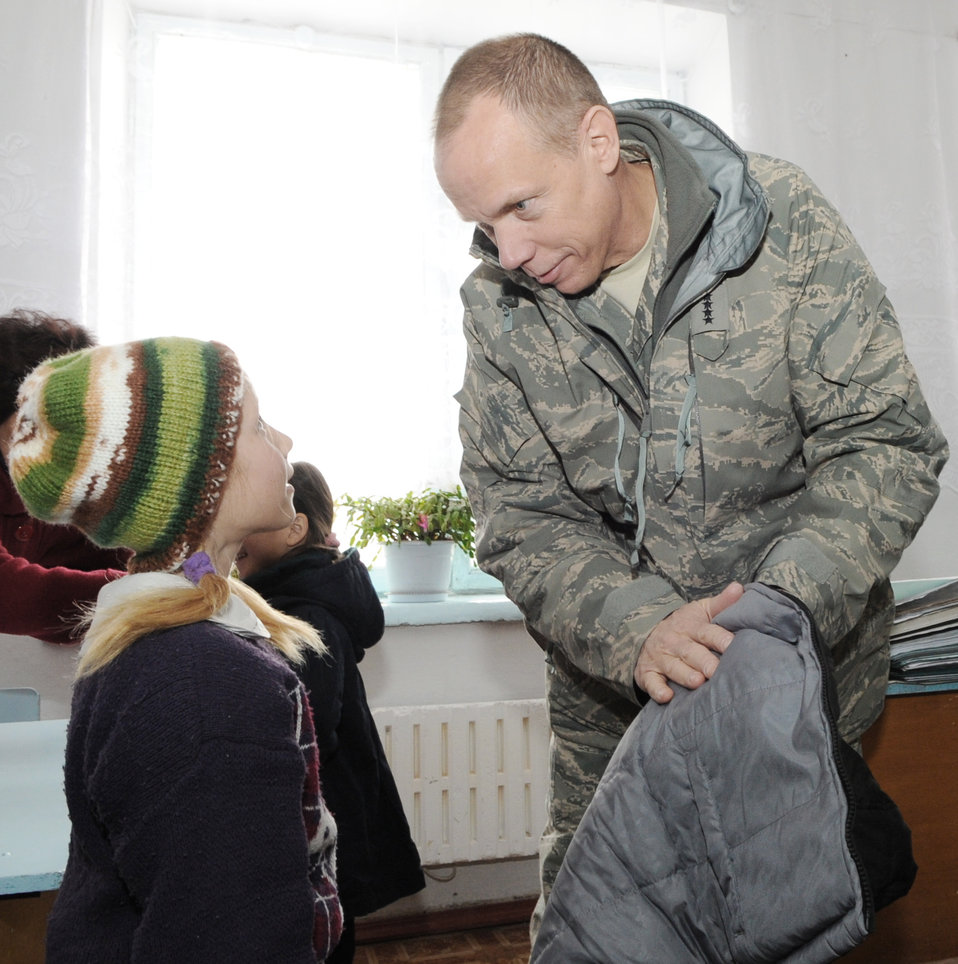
Generals visit Kyrgyz school

Gen. Donald J. Hoffman hands a warm coat to an elementary school girl Feb. 9, 2010, at the Grozd School in Grozd Village, Kyrgyzstan. General Hoffman is the commander of the Air Force Materiel Command.